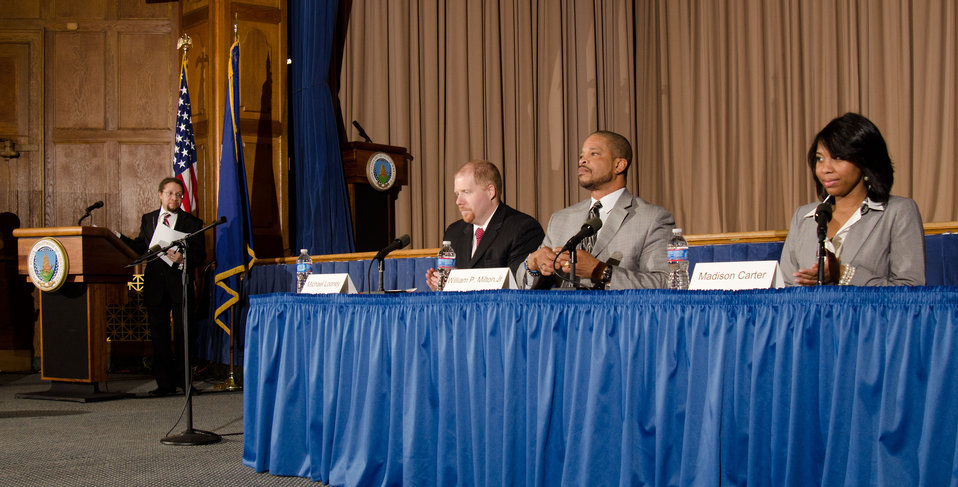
United States Department of Labor Office of Disability Employment Policy, Policy Advisor Patrick Cokley (at podium) introduced and moderated the discussion panel of Federal Aviation Administration National Outreach Team for Diversity and Inclusion National People with Disabilities Program Manager Michael Looney (third from right), United States Department of Agriculture (USDA) Departmental Management Office of Human Resources Management Deputy Director William P. Milton, Jr. (second from right), and USDA Food Safety and Inspection Service Meditation and Life/Work Services Division Program Support Assistant Madison Carter (right), during the Work Force Recruitment Program’s (WRP) “Your Key To Hiring Student Interns and Employees with Disabilities” event hosted by the United States Department of Agriculture (USDA) and held in the Jefferson Auditorium, in Washington, D.C. on Tuesday, February 7, 2012.